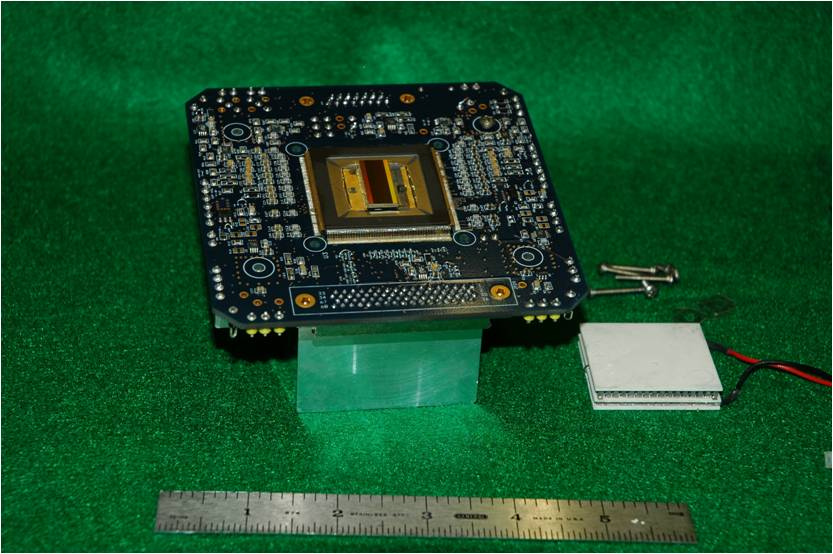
At Pacific Northwest National Laboratory, the array detection technology for mass spectrometry, mounted here onto a chip carrier and circuit body, significantly update the detection capabilities of mass spectrometers.